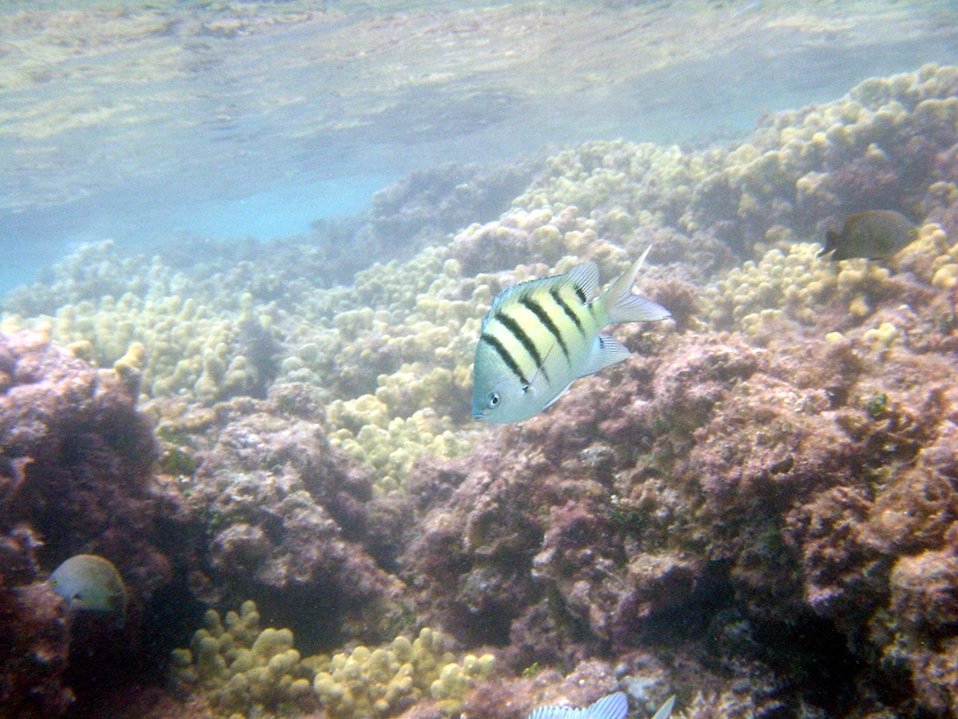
A sergeant major damselfish (Abudefduf abdominalis). Hawaiian name is mamo.